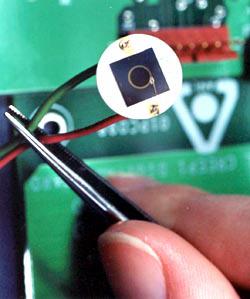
ARGONNE SCIENTIST HOLDS WAFER WHICH CAN BE USED IN PORTABLE NUCLEAR DETECTORS.

THIS SMALL WAFER IS BEING CONSIDERED AS THE KEY COMPONENT IN SMALL, PORTABLE DETECTORS FOR FINDING CONCEALED NUCLEAR WEAPONS AND MATERIALS.